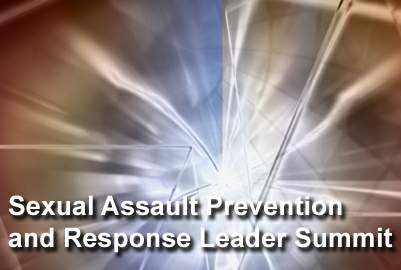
Air Force officials host Sexual Assault Prevention, Response Leader Summit

To reinforce the service's commitment to protect Airmen and maintain a safe environment, senior leaders gathered for the 2009 Air Force Sexual Assault Prevention and Response Leader Summit Nov. 16, 2009, in Washington, D.C.